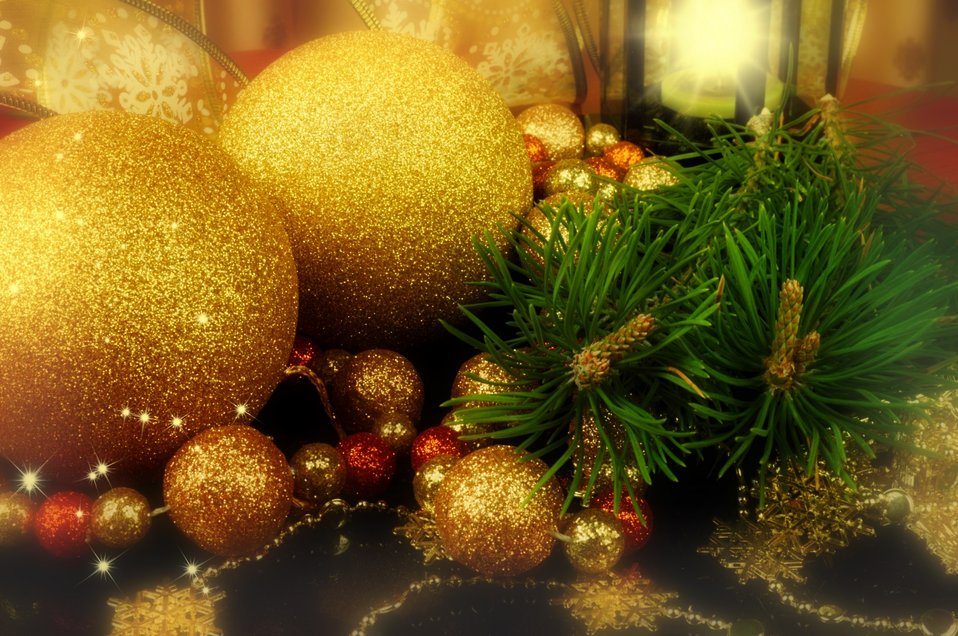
Christmas background

Background of christmas decorations.